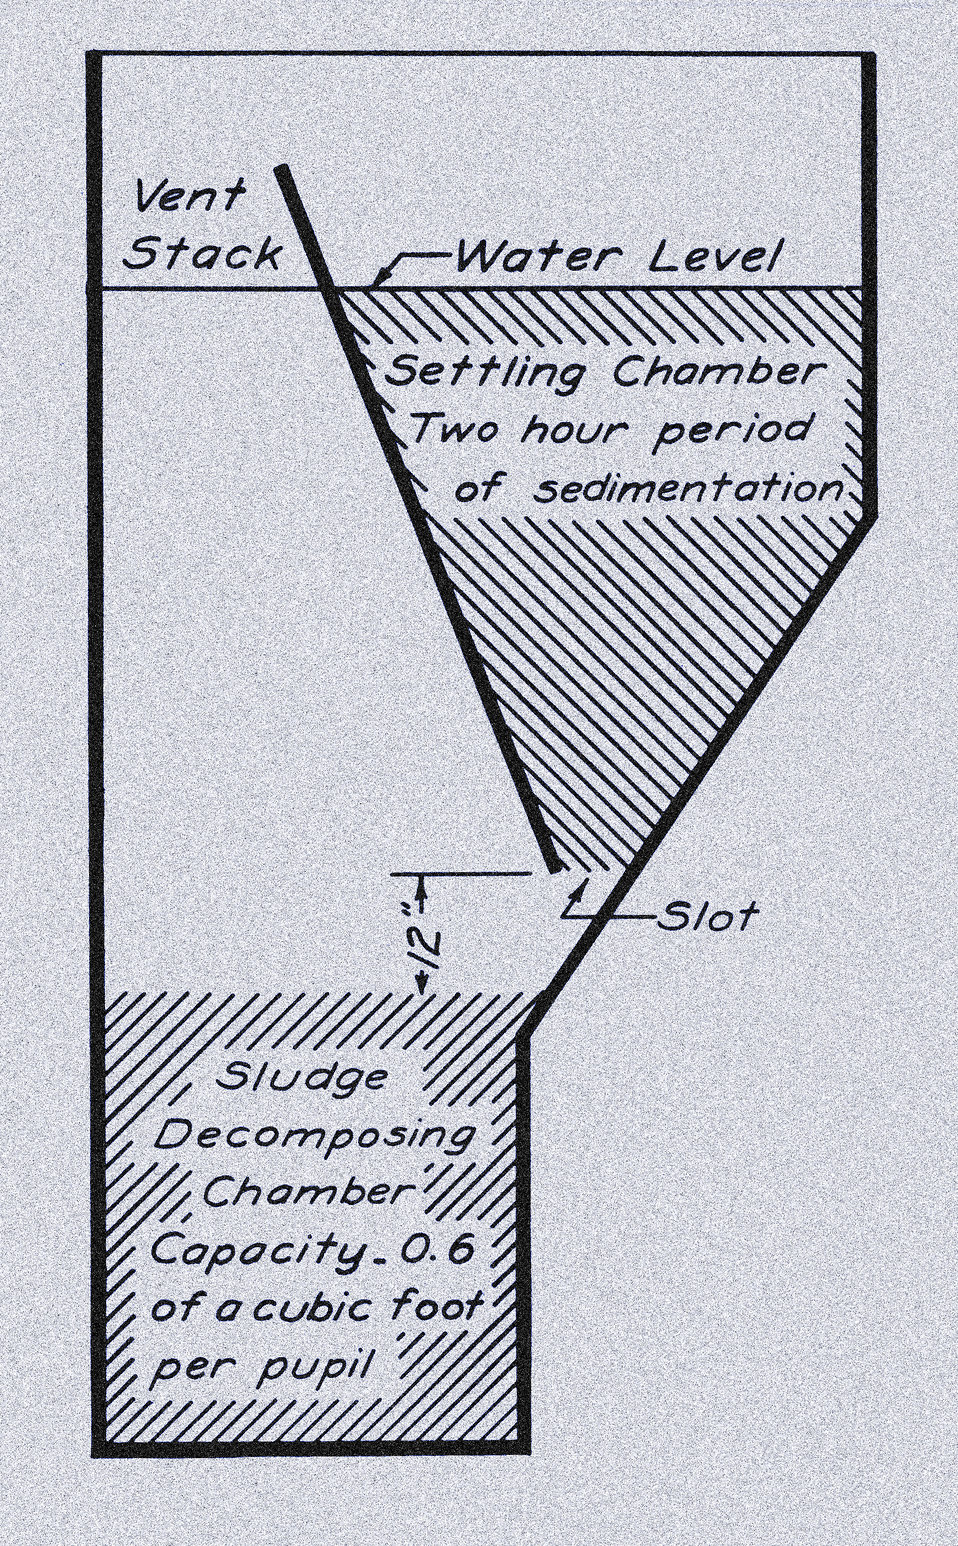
This historic diagram, which had been digitally enhanced and colorized, depicted an Imhoff sewage treatment tank from a cross-sectional perspective revealing the tank's chambers. It also explained the capacity of this design to serve the needs of pupils at an average public school in Minnesota. The Imhoff tank was a chamber created to receive, and process raw sewage. At its essence, it was a two-story septic tank. It collected sewage in the upper chamber in which sedimentation took place. The solids fell down sloped inclines to a bottom chamber in which the sludge was collected and digested by bacteria.